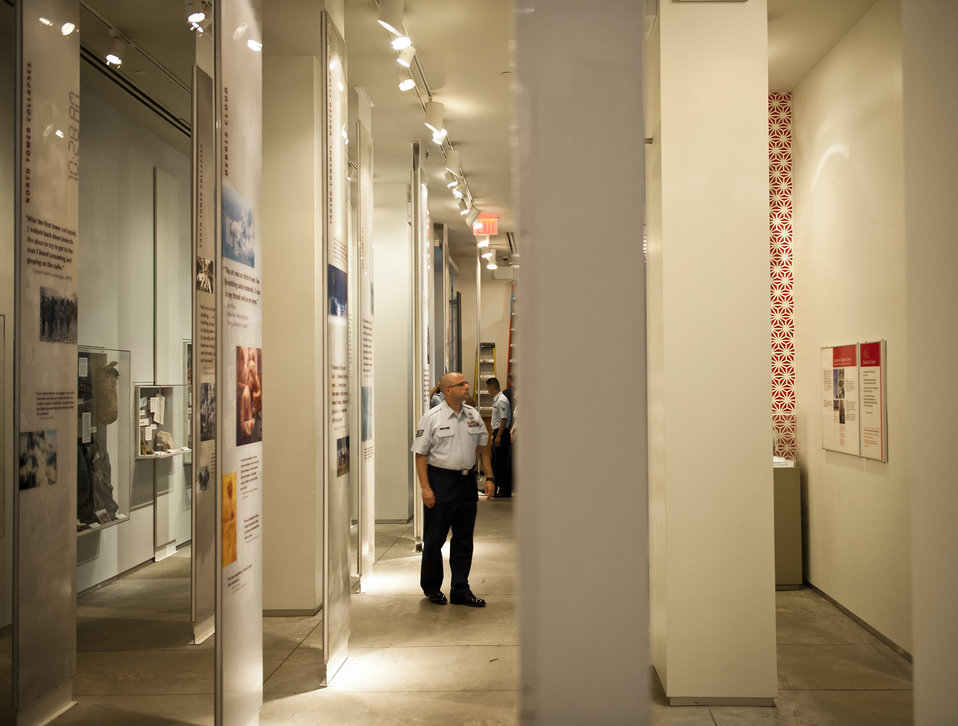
2012 Air Force Week NYC

Staff Sergeant Tim Piefer looks at the photos of the missing and dead men, women and children from the terrorist attacks at the World Trade Center Building on September 11, 2001, at the 9/11 Museum on August 20, 2012 in New York City. Piefer is from 87th Air Base Wing JA at Joint Base McGuire-Dix-Lakehurst, N.J.